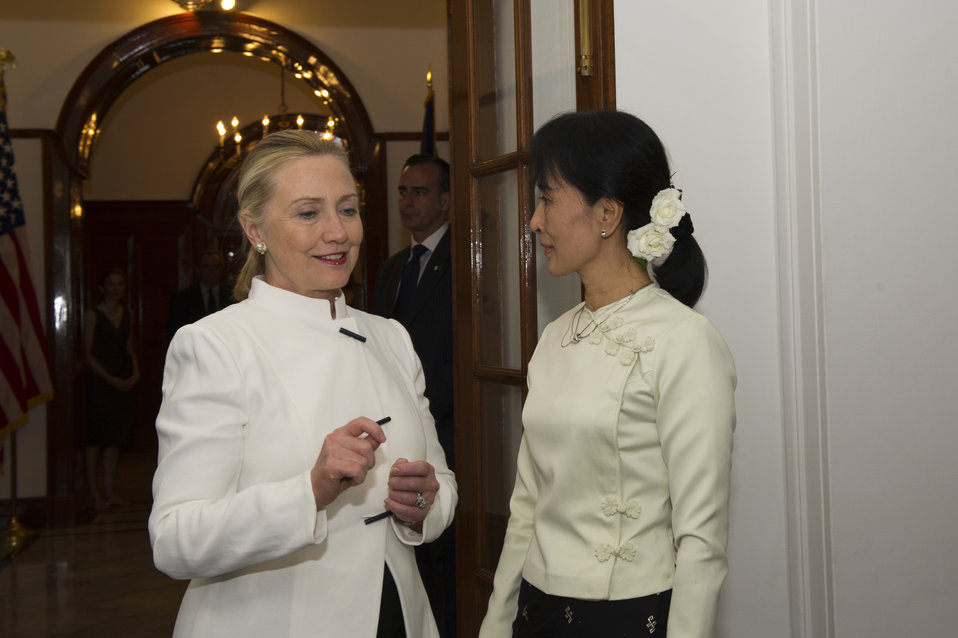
Secretary Clinton Meets With Daw Aung San Suu Kyi

U.S. Secretary of State Hillary Rodham Clinton meets with Daw Aung San Suu Kyi for dinner in Rangoon, Burma, on December 1, 2011.